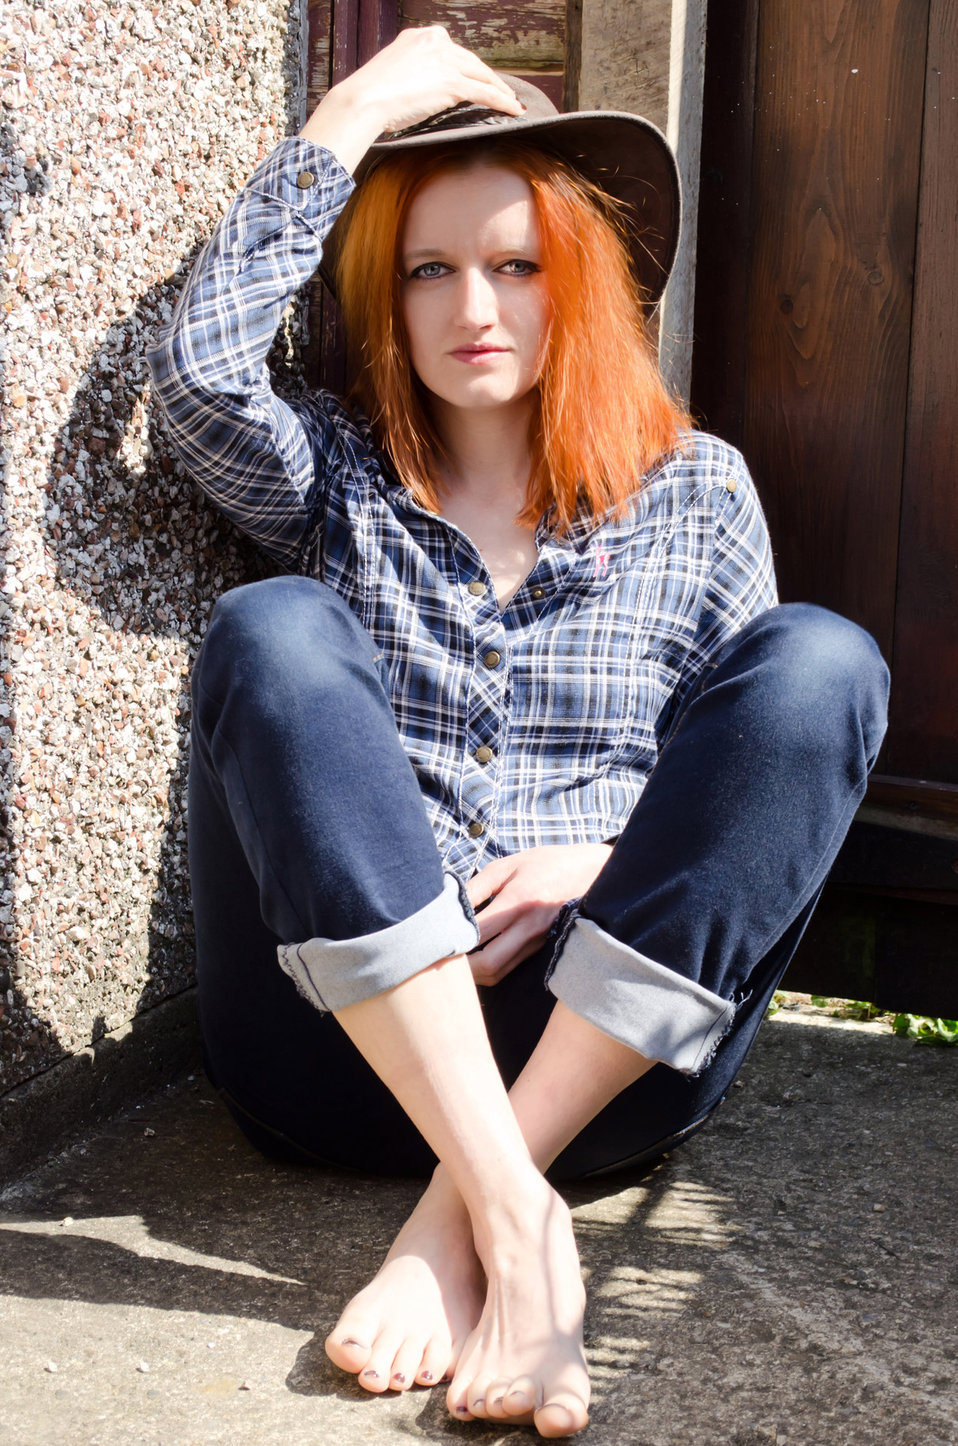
Woman - fashion.